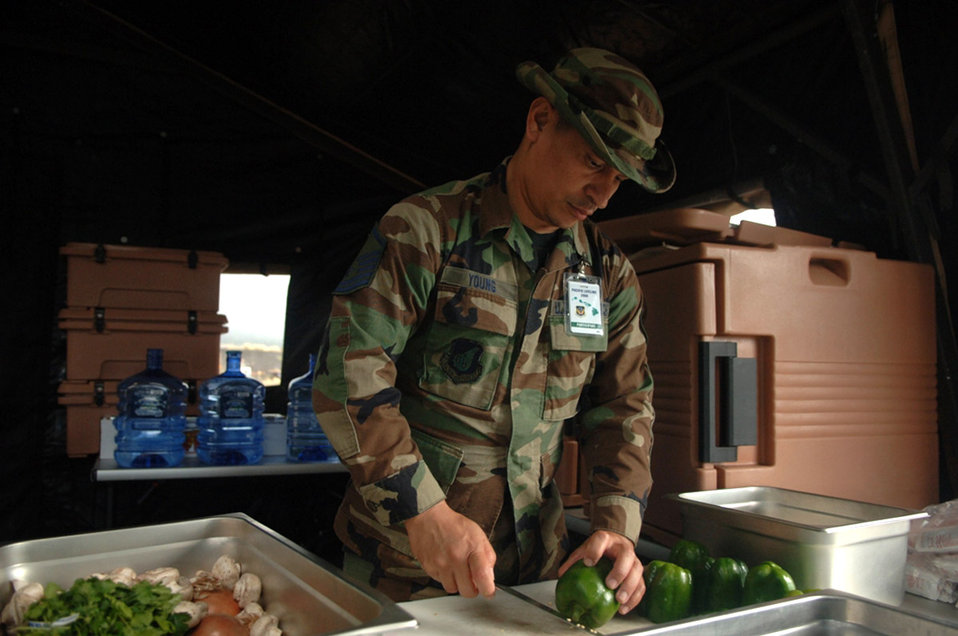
Fueling the force

Master Sgt. Brunson Young prepares fresh vegetables Jan. 31 for an evening meal during the Pacific Air Forces total force humanitarian assistance and disaster relief exercise at the Kona International Airport in Hawaii. Sergeant Young is the services nightshift leader for the Pacific Lifeline exercise. Sergeant Young is with 154th Wing at Hickam Air Force Base, Hawaii.